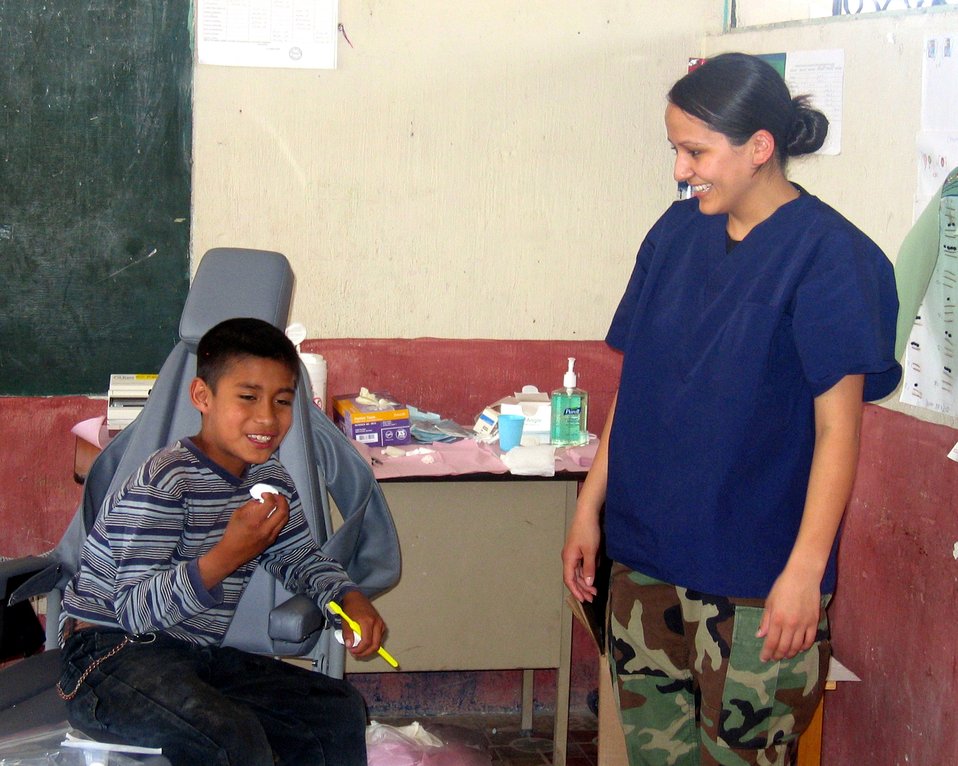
Air Force medics provide medical relief in Guatemala

Airman 1st Class Laura Valenzuela De La Hoya, a dental technician from Vandenberg AFB, Calif., shares a laugh with a Guatemalan child after his dental visit. Airman Valenzuela De La Hoya assisted in extracting nearly 900 teeth and restoring another 85 during a 10-day humanitarian mission to various regions of Guatemala in April.